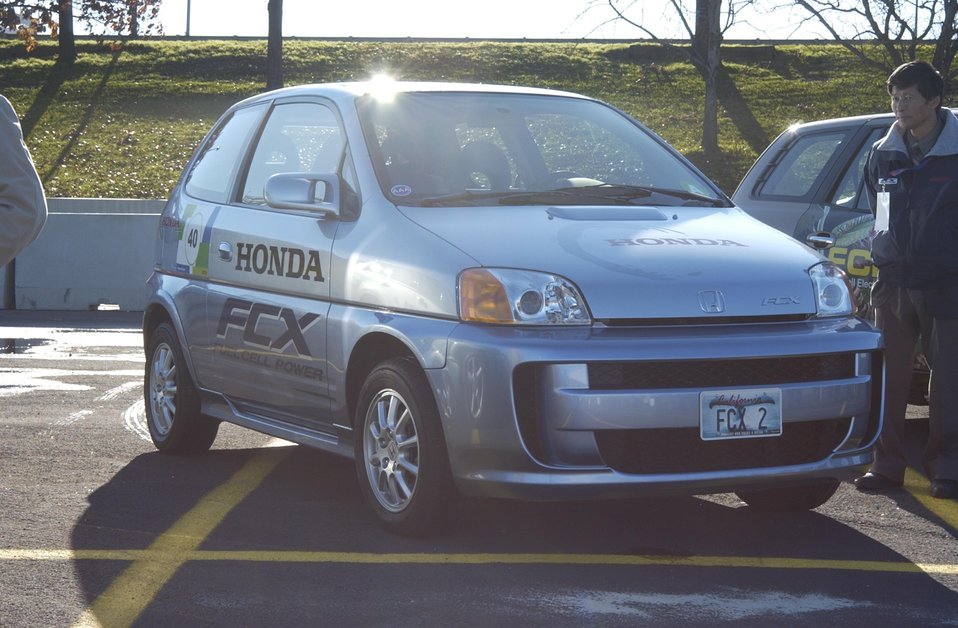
THE HONDA FCX FUEL CELL VEHICLE.

HYDROGEN IS A CLEAN AND SUSTAINABLE FORM OF ENERGY THAT CAN BE USED IN MOBILE AND STATIONARY APPLICATIONS. FUEL CELLS HARNESS THE CHEMICAL ENERGY OF HYDROGEN TO GENERATE ELECTRICITY WITHOUT COMBUSTION OR POLLUTION. HYDROGEN AND FUEL CELLS HAVE THE POTENTIAL TO SOLVE SEVERAL MAJOR CHALLENGES FACING THE COUNTRY TODAY SUCH AS DEPENDENCE ON PETROLEUM IMPORT, POOR AIR QUALITY, AND GREENHOUSE GAS EMISSIONS.